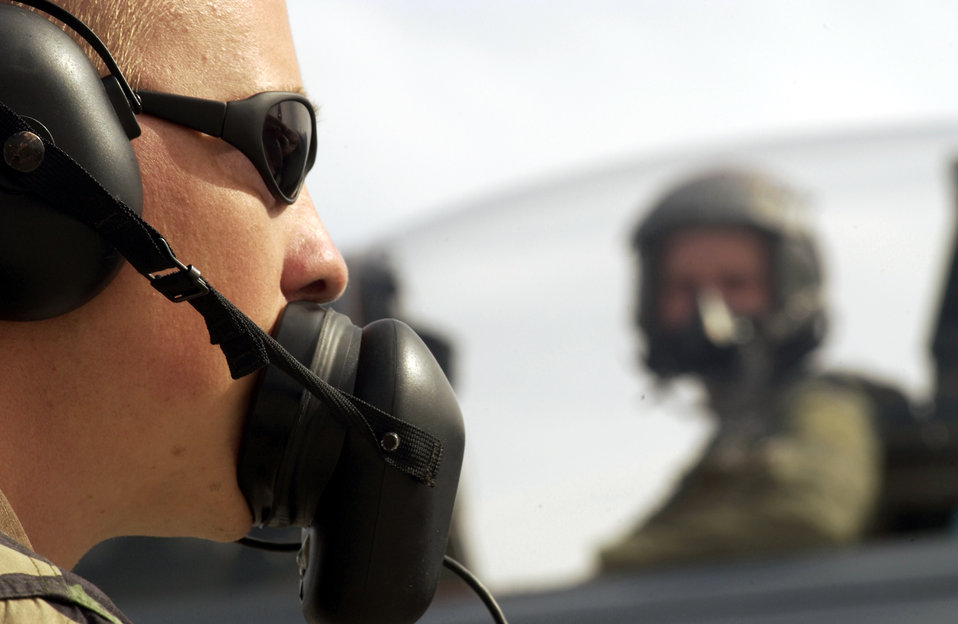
Focused sortie

NELLIS AIR FORCE BASE, Nev. -- Airman 1st Class Ryan Allen, foreground, talks to Capt. August Pfluger after a successful Red Flag flight here March 4. Aircrews, maintainers and support Airmen from Kadena Air Base, Japan, were here participating in the exercise. Red Flag is an exercise that tests warfighting skills in real-time combat situations. Captain Pfluger is an F-15 Eagle pilot and Airman Allen is a crew chief. They are assigned to the 67th Tactical Fighter Squadron at Kadena.